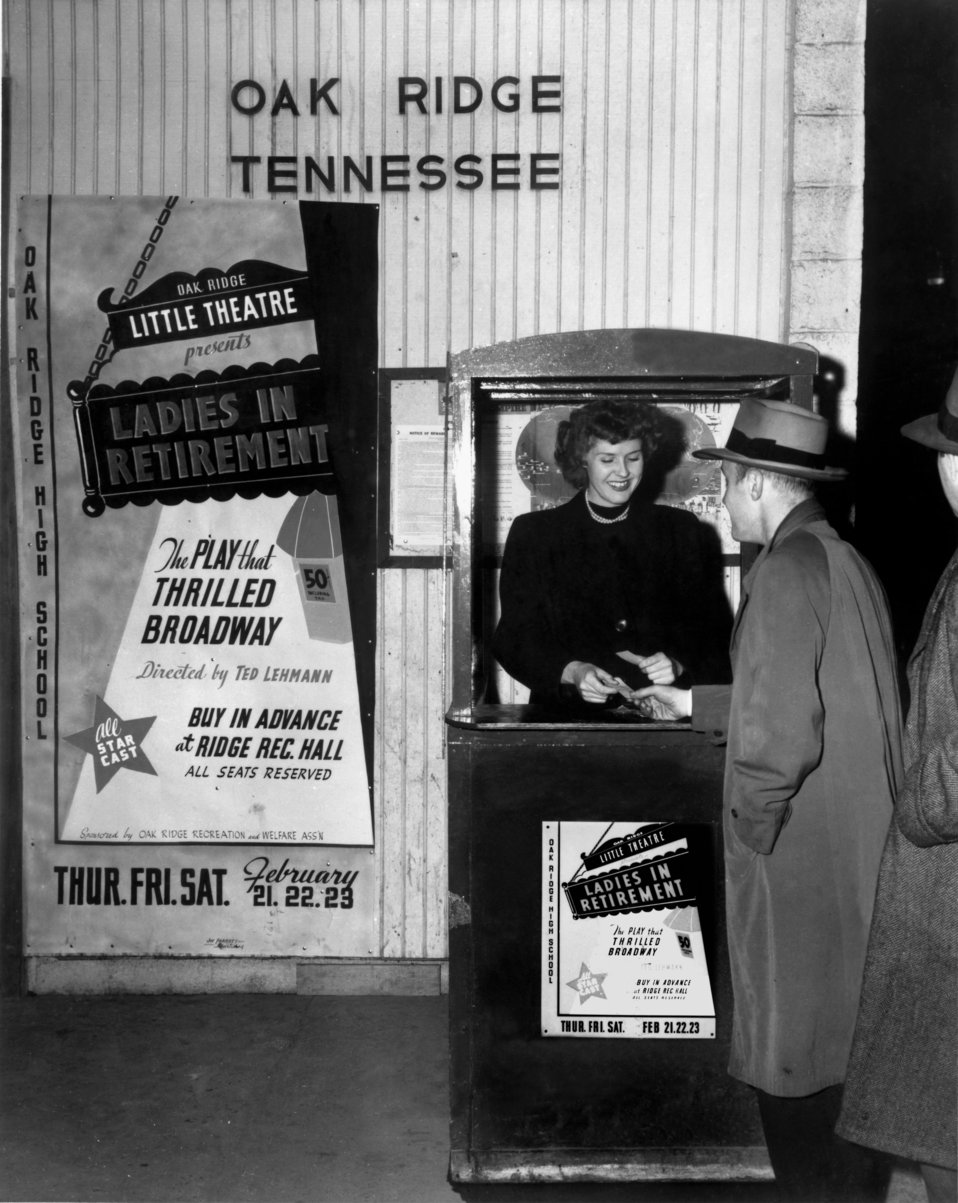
Little Theater

1428 DOE photo by Ed Westcott

Oak Ridge Tennessee 2-6-1946